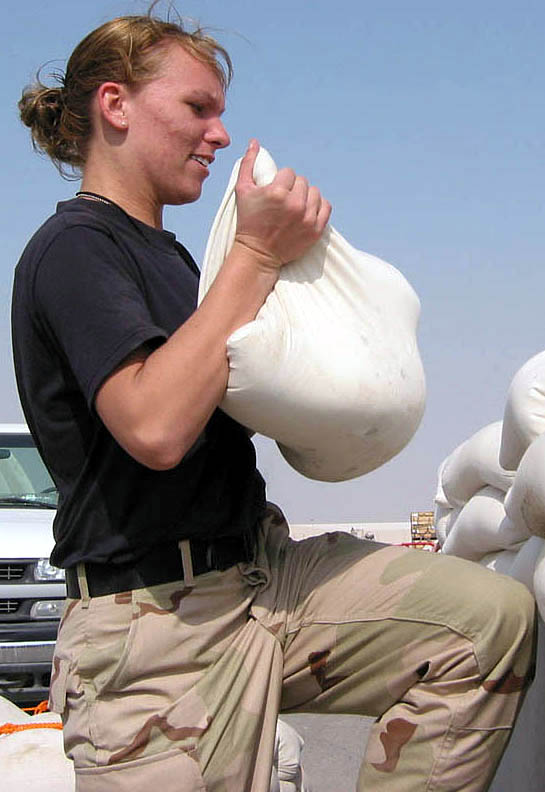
In the bag

OPERATION ENDURING FREEDOM (AFPN) -- Senior Airman Heather Anthony lifts one of many sandbags to help secure liners of the fuel farm at a forward-deployed location. Anthony and co-workers from the 380th Expeditionary Logistics Readiness Squadron's petroleum, oil and lubricants section were joined by base volunteers for the fuel farm expansion project.